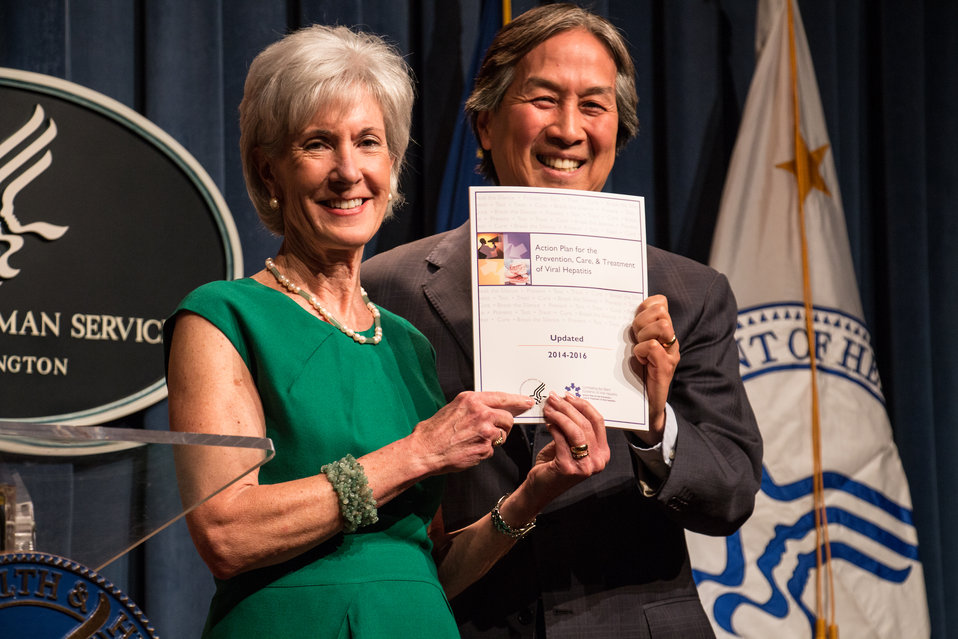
VHAP Launch (185 of 511)